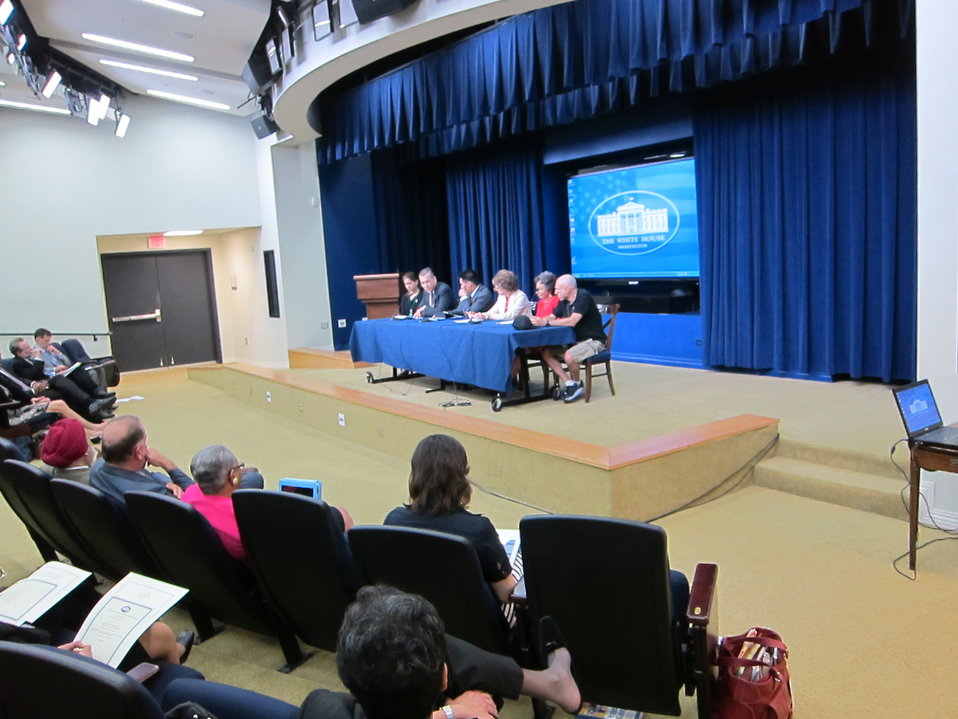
WH 2012 World Hepatitis Day Event